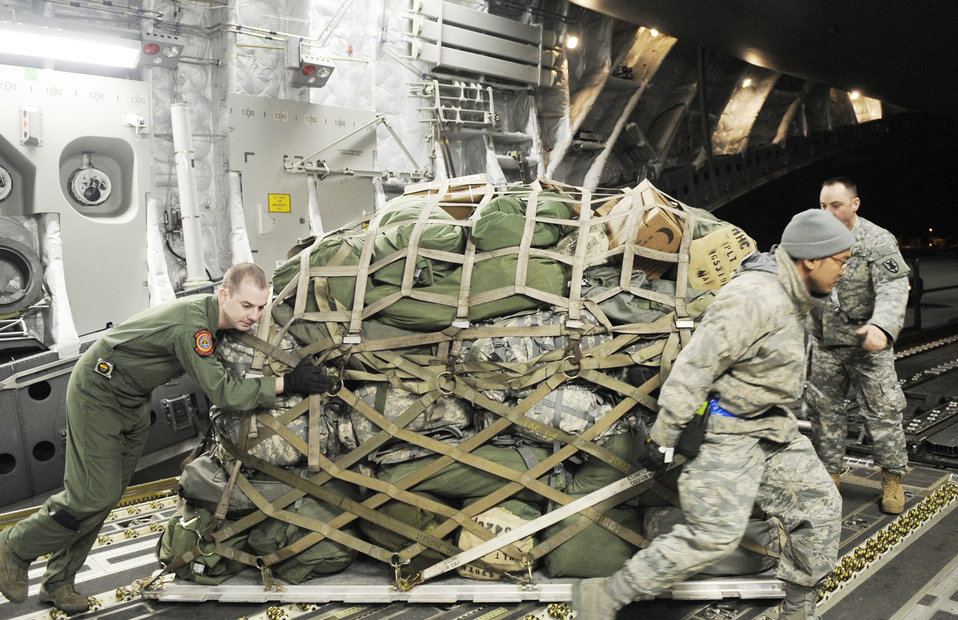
Give it a push

Soldiers and Airmen load cargo onto a C-17 Globemaster III Feb. 8, 2010, at Langley Air Force Base, Va. Servicemembers and cargo are going to Haiti as part of Operation Unified Response in a joint effort by Soldiers and Airmen from Joint Base Langley-Eustis.